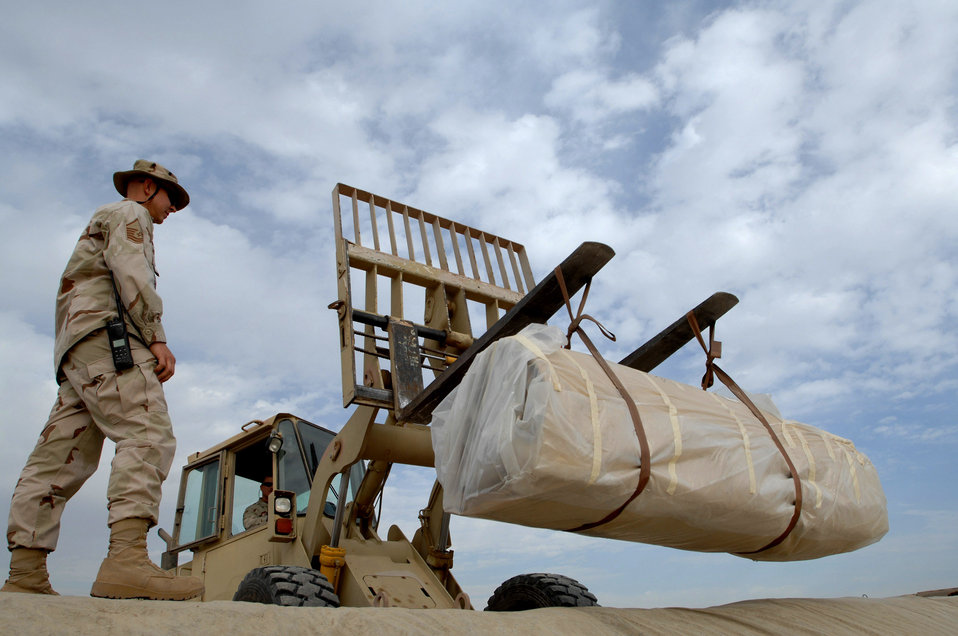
Completing a bladder transplant

Master Sgt. Wade Headlee observes as a new 900-pound fuel bladder is lowered into a hole Dec. 3 at Ali Base, Iraq. Airmen from the 407th Expeditionary Logistics Readiness Squadron fuels shop periodically replace fuel bladders to prevent ruptures. The new bladder can hold up to 50,000 gallons of fuel. Sergeant Headlee is deployed from Kadena Air Base, Japan.